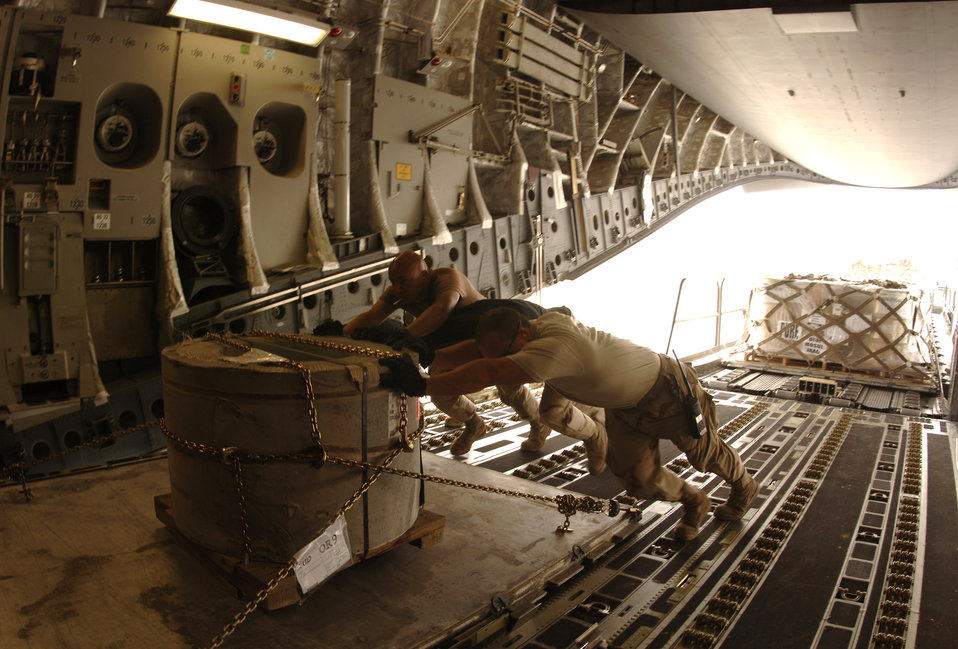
Aerial port hub keeps passengers, cargo rolling

Aerial porters from the 8th Expeditionary Air Mobility Squadron load palletized cargo onto a C-17 Globemaster III for intratheater shipment. The cargo sits on rollers on the ramp and is pushed into the plane by a 60K loader. The squadron processes about 250,000 pounds of cargo for intertheater and intratheater shipments each day.